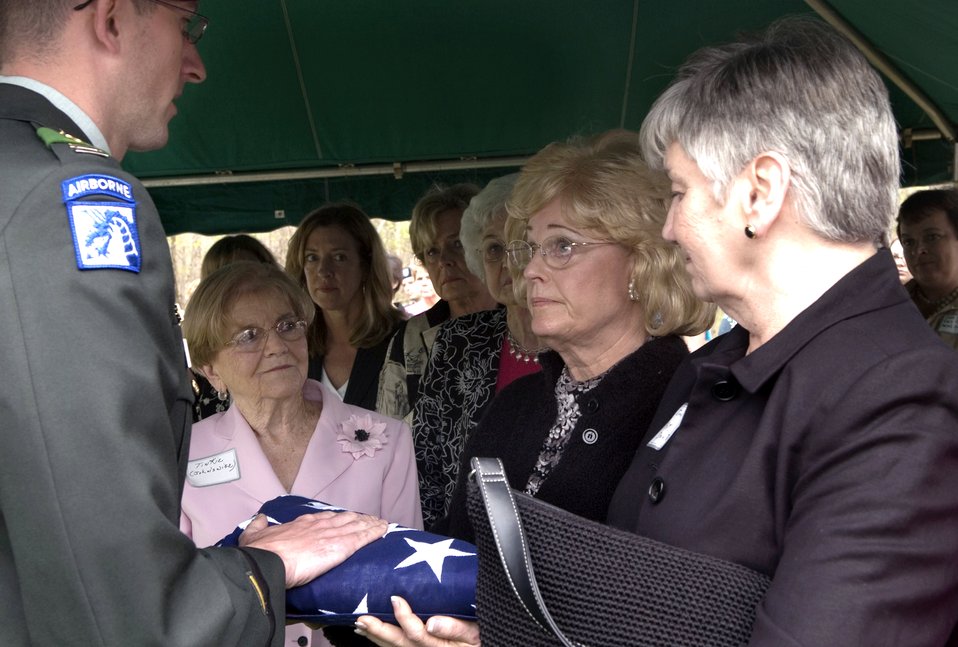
Pilot burial solves two mysteries

Barbara Rowland receives the flag from Capt. Rick Kimberlin on Saturday, April 8, 2006, during a memorial service for her uncle, 2nd Lt. Robert Hoyle Upchurch. The lieutenant, a member of the famed Flying Tigers during World War II, was listed as missing in action after his P-40 Warhawk crashed during bad weather. The Upchurch family designated Ms. Rowland as the closest next of kin able to attend the ceremony. Captain Kimberlin is assigned to Fort Bragg, N.C.